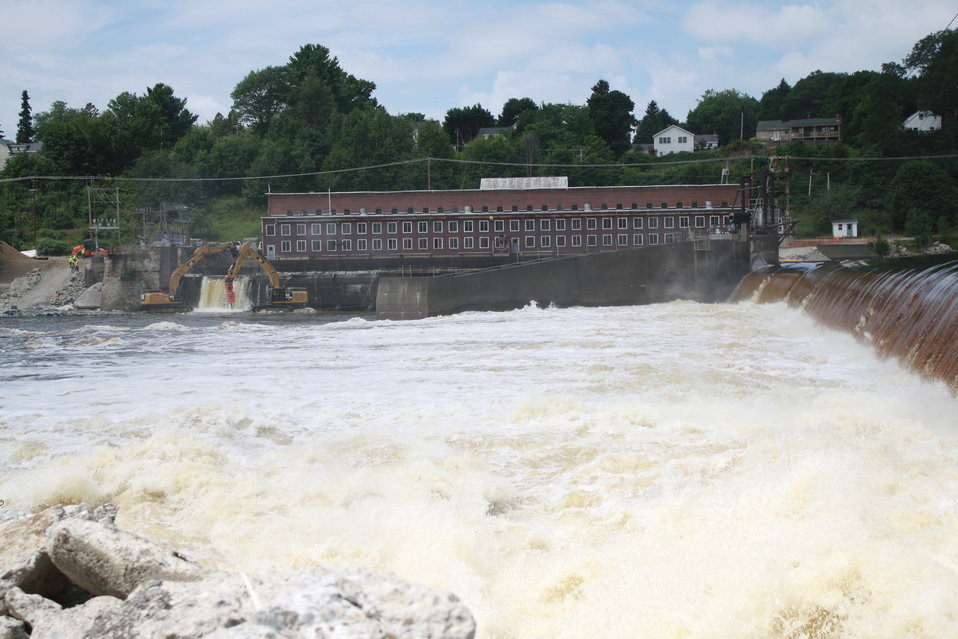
Veazie Dam Removal

The removal of the dam is anticipated to occur over two construction seasons (2013-2014); however, by the end of the 2013 construction season there will be adequate passage for Atlantic salmon and other 'upriver' species to pass the site, so that they can travel upstream past the former Great Works site, all the way to the Milford Dam in Old Town and Milford.